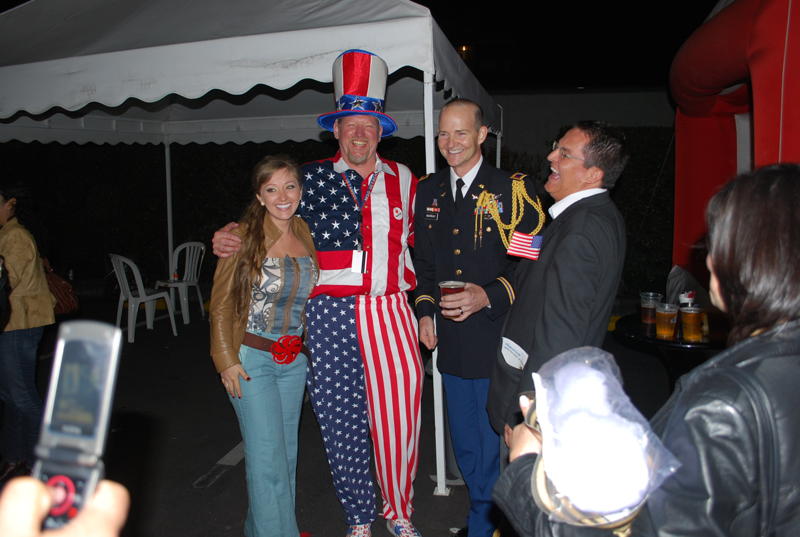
Uncle Sam poses for a photo with friends during the U.S. Independence Day reception at the U.S. Embassy Bogotá in Colombia, on July 2, 2010.